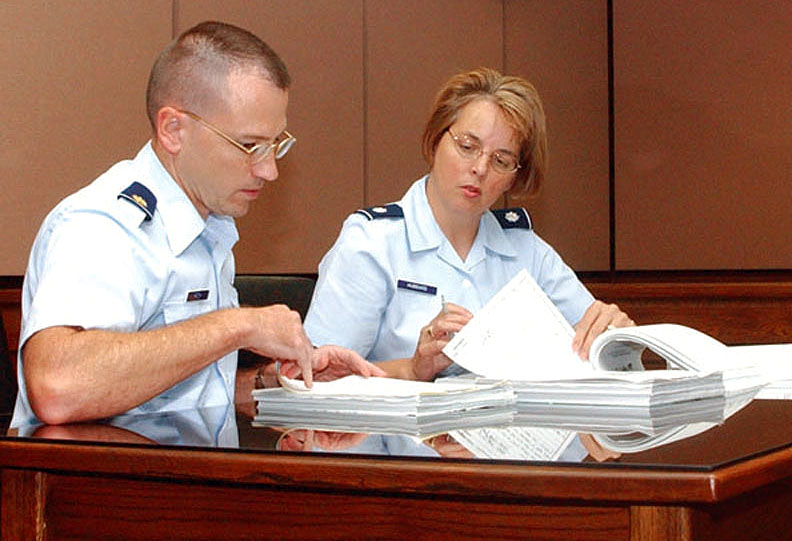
Legal office

TYNDALL AIR FORCE BASE, Fla. (AFPN) - Maj. Mark Hatch and Lt. Col. Carol Hubbard review court-martial cases in the legal office here. Hatch is the 325th Fighter Wing deputy staff judge advocate and Hubbard is the wing's staff judge advocate.